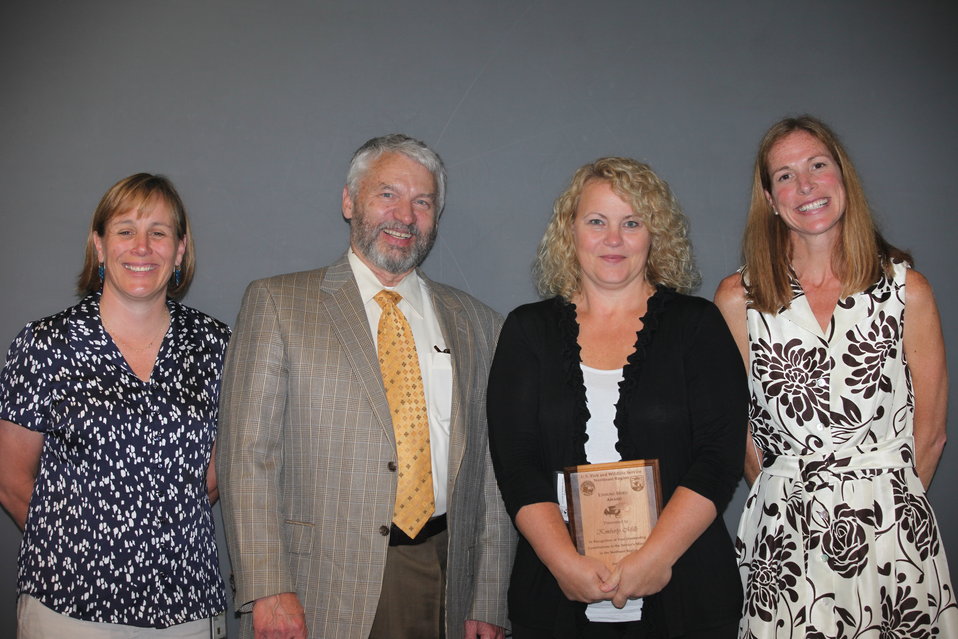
Kimberly Mills, Information Technology Management recieved a Region 5 Unsung Hero Award.
From left to right: Deputy Regional Director Deb Rocque, Deputy Director Rowan Gould, Kimberly Mills, and Regional Director Wendi Weber